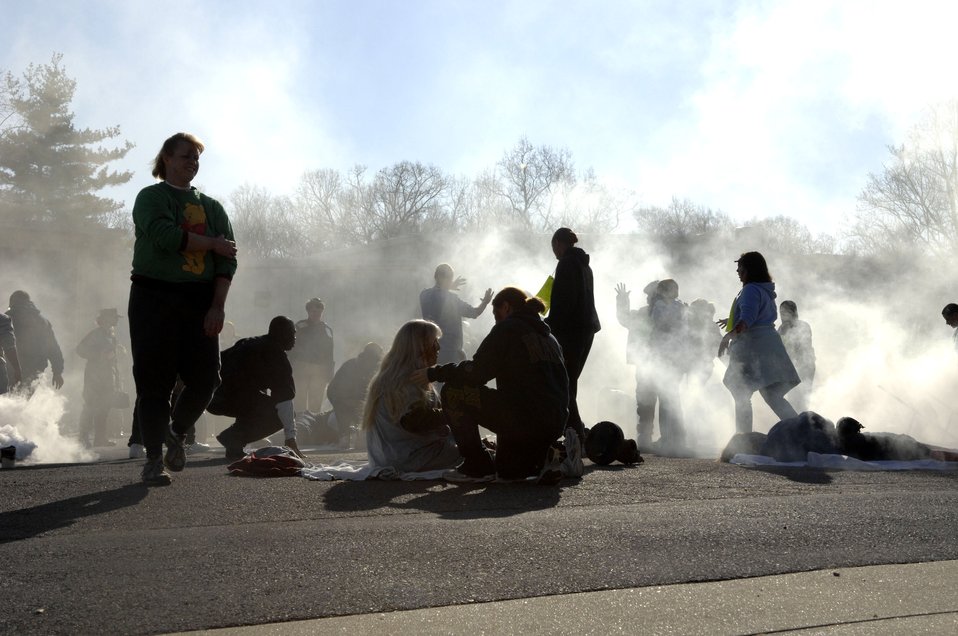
CMAX/Collaborative Multi-Agency Exercise

Chaos occurs as